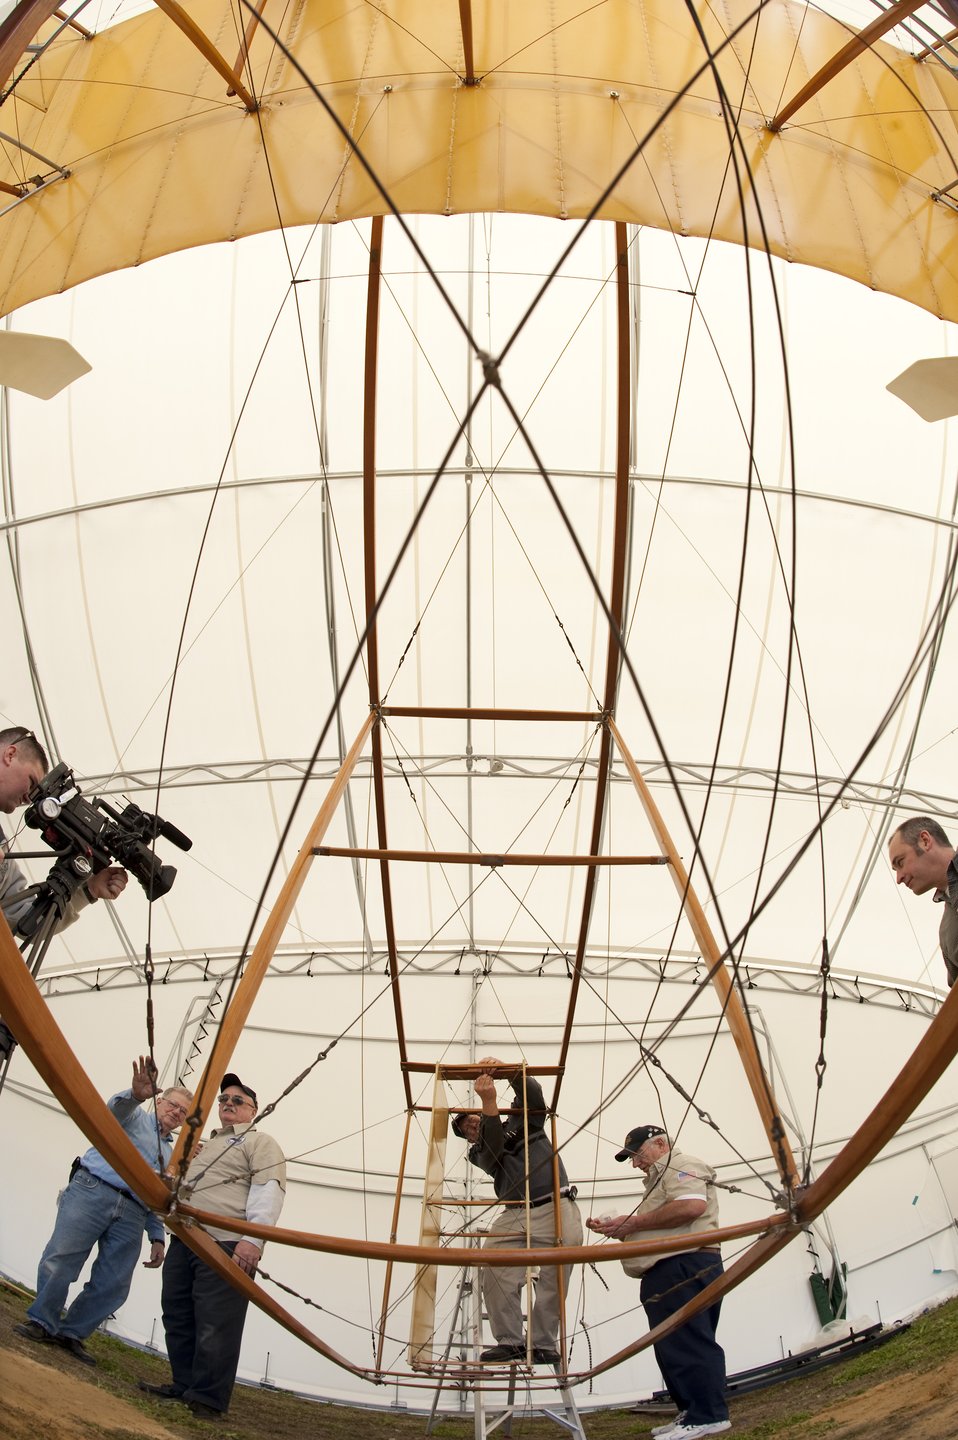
Wright

Don Gum (center), Wright